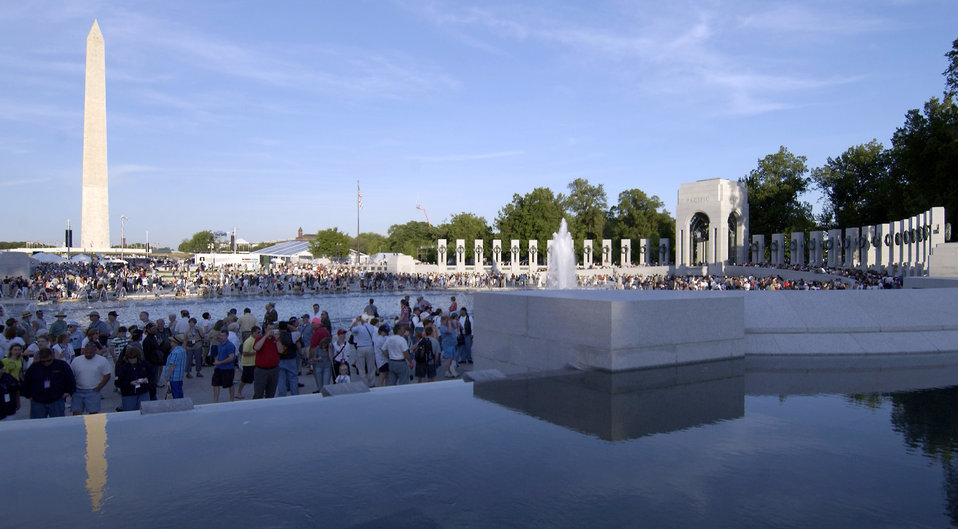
National World War II Memorial dedicated

WASHINGTON -- The largest gathering of World War II veterans since 1945 assembled on the National Mall to witness the dedication of their long-awaited memorial May 29. More than 100,000 people were on hand as President Bush officially accepted the National World War II Memorial on behalf of a grateful nation. The 7.4-acre granite and bronze tribute took 17 years to complete.